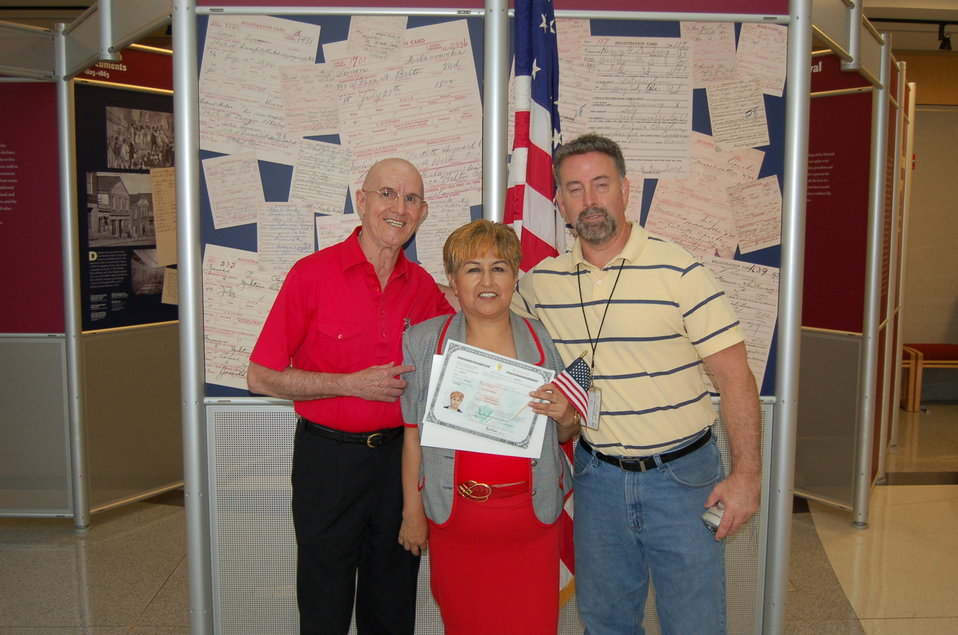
New Citizens